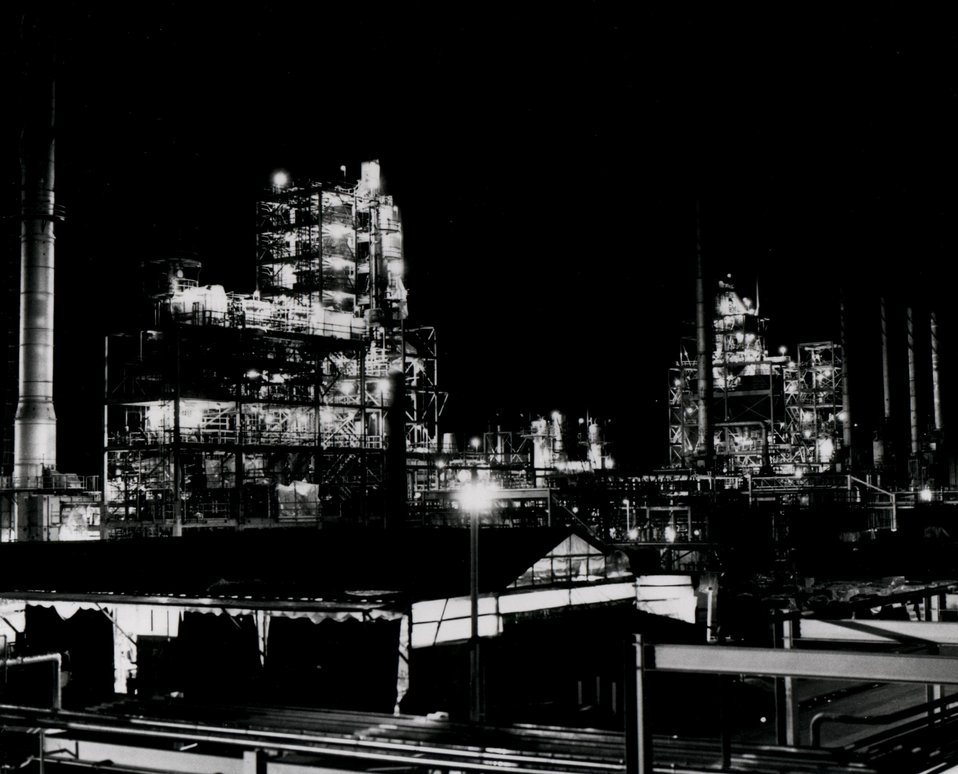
Construction progress at the H-Coal 600 tons per day pilot plant at Catlettsburg, Kentucky. Circa 1980.